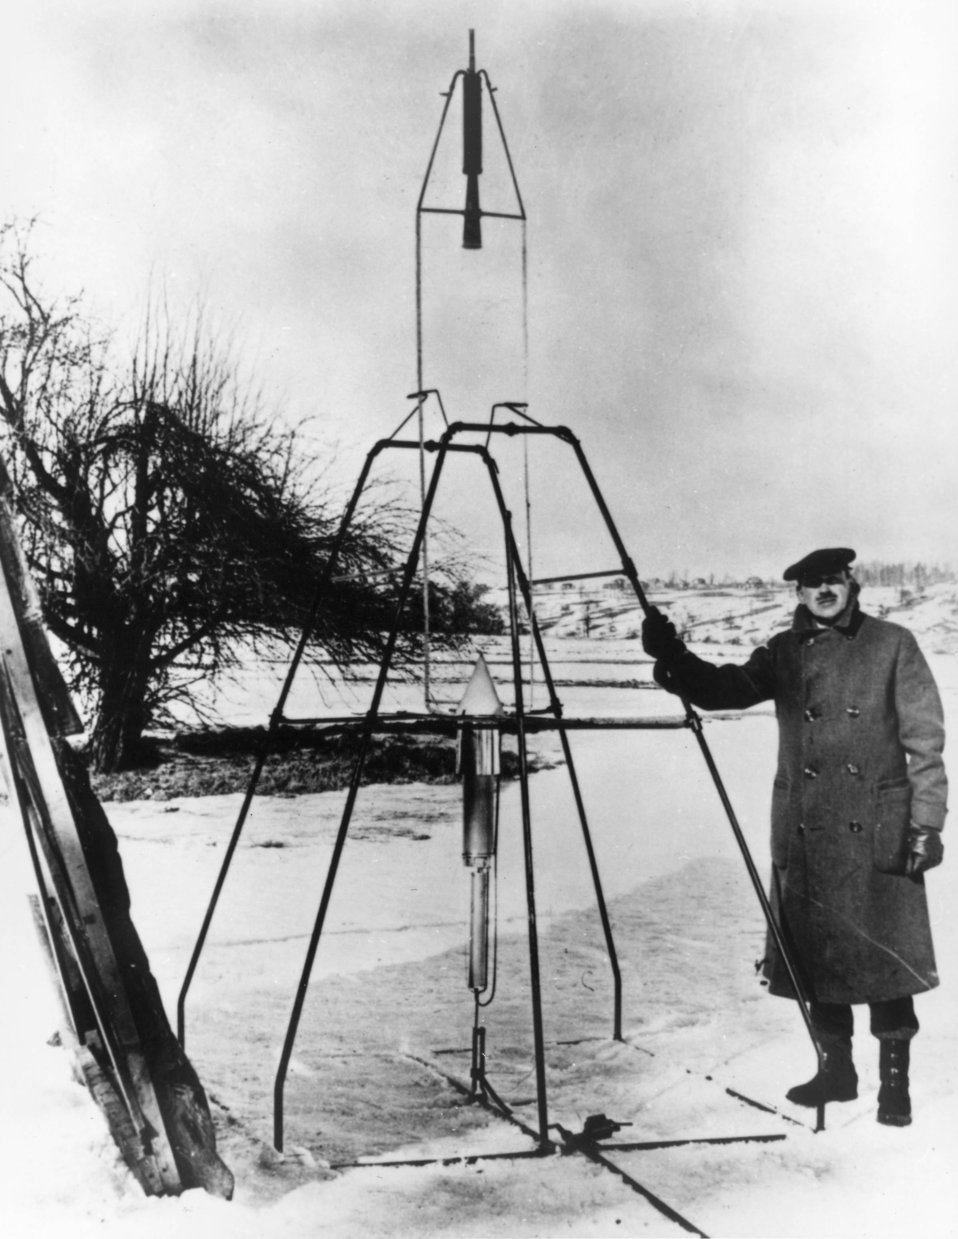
Robert H.Goddard, American Rocket Pioneer

EARLY YEARS -- Robert H. Goddard besides 1926 liquid- fueled rocket. The rocket is on top, receiving its fuel by two lines from the tank at the bottom. Goddard's rockets made little impression upon government officials at the time.